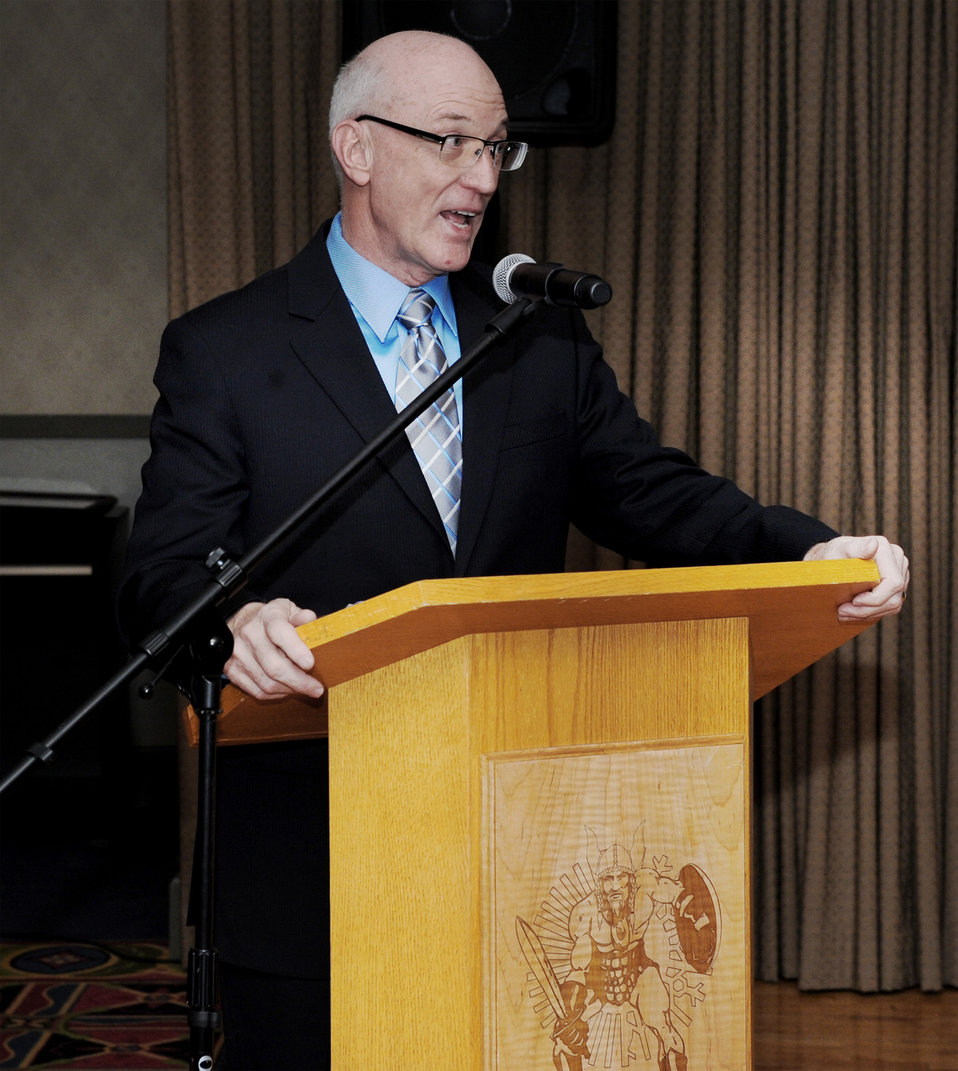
Chief of chaplains celebrates National Prayer Dinner at Grand Forks

Chaplain (Maj. Gen.) Cecil R. Richardson addresses guests at the National Prayer Dinner Gala Jan. 21, 2011, at Grand Forks Air Force Base, N.D. The gala's theme,